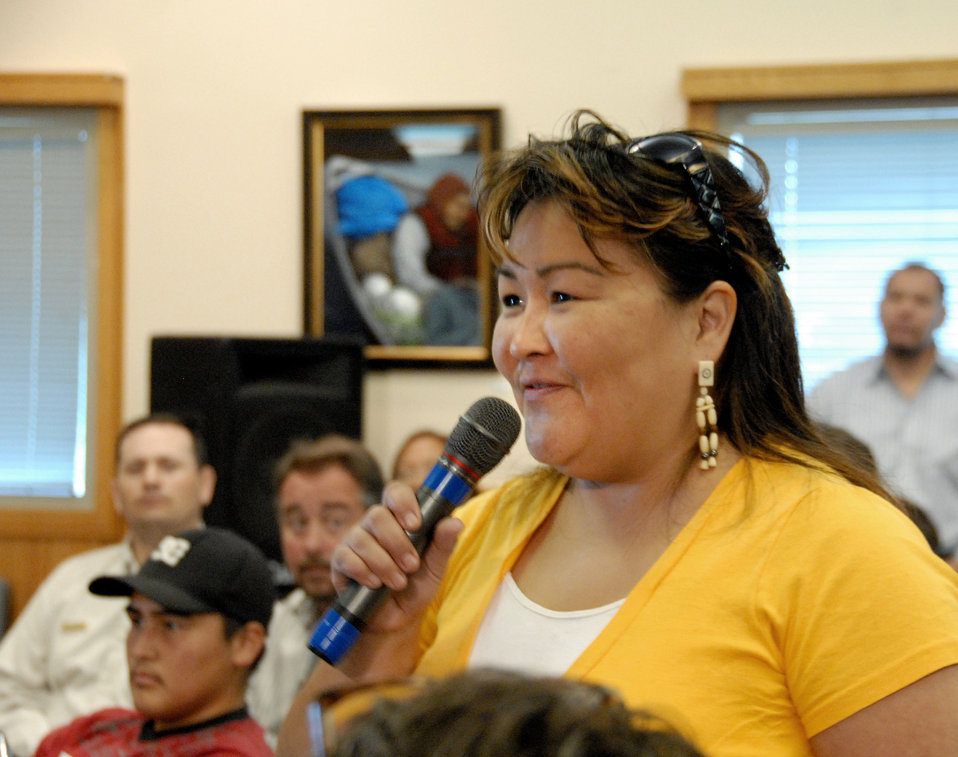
Rural Tour 0166

Rural Tour Alaska Aug 2009